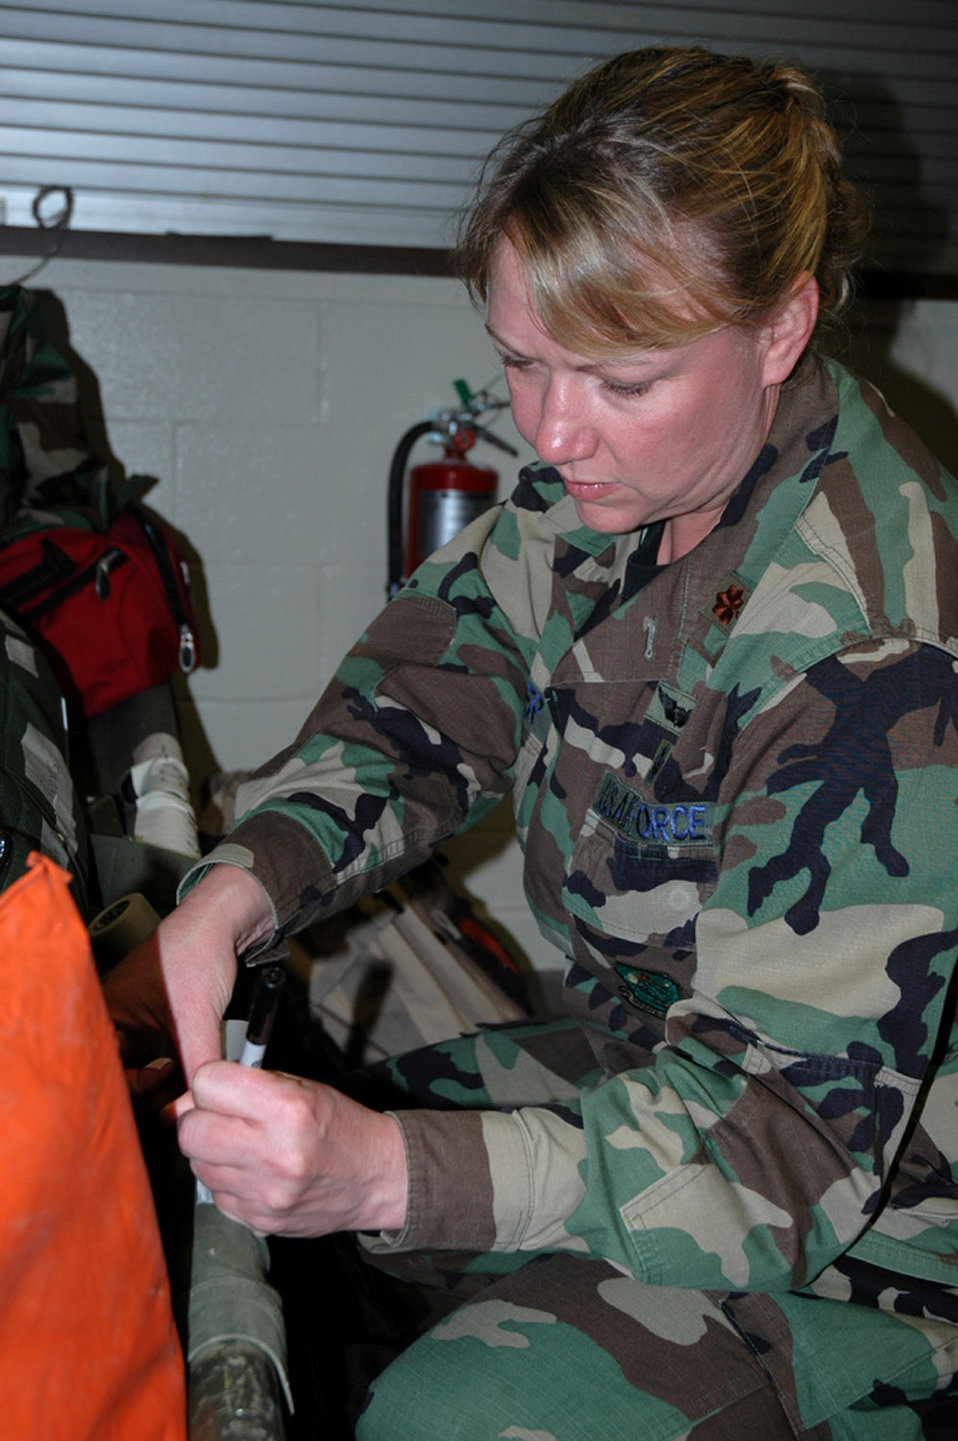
CATT

Maj. Jenifer Cackler inventories a supply bag Jan. 31, making sure the Critical Care Air Transport Team has every medicine they need during flights for the Pacific Lifeline exercise. Pacific Lifeline is a humanitarian assistance disaster response exercise taking place over three Hawaiian Islands Jan. 26 to Feb. 9. More than 900 Department of Defense personnel will participate. Major Cackler is a registered nurse for the 446th Aeromedical Staging Squadron at McChord Air Force Base, Wash.